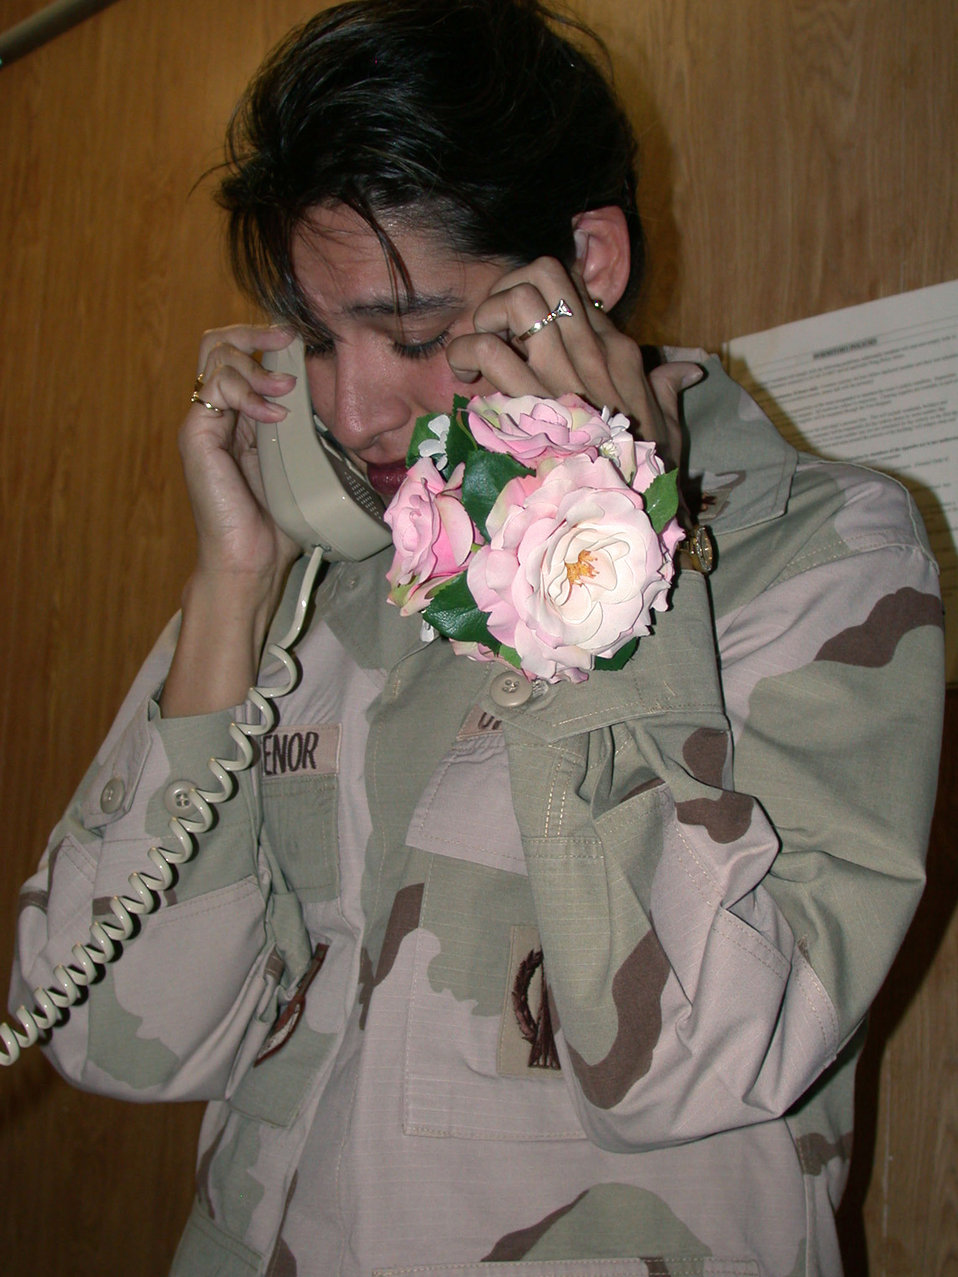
Technology unites Airmen in matrimony

SOUTHWEST ASIA -- Maj. Heather Villasenor exchanges wedding vows with Lt. Col. Michael Bryant over the phone at a forward-deployed location April 26. Colonel Bryant called from his lawyers office in McLean, Va. Colonel Bryant is the Joint Staff target operations chief in Washington and Major Villasenor is a senior intelligence duty officer.